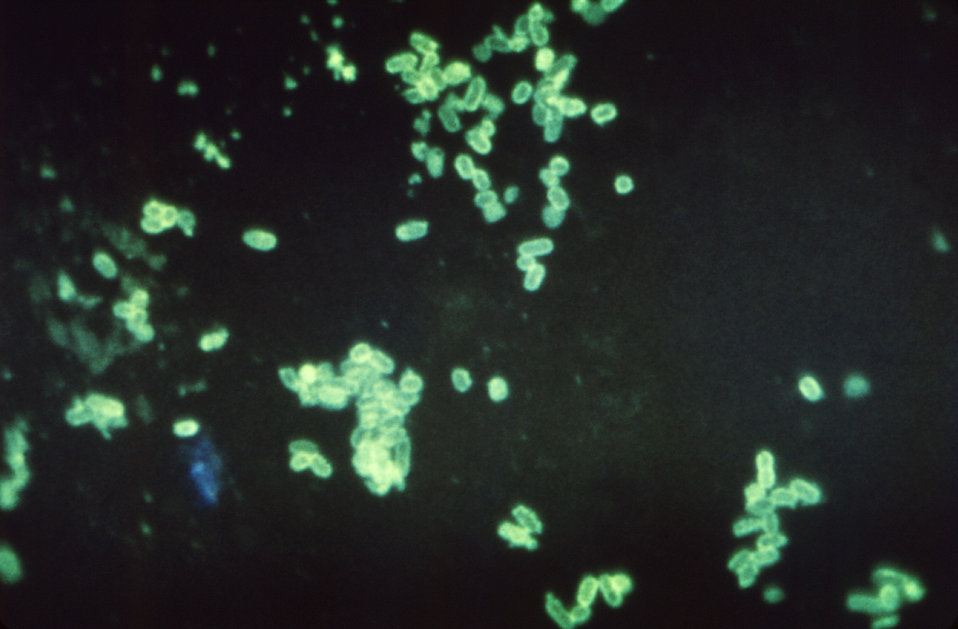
Magnified 1250X, this fluorescent antibody stained photomicrograph revealed the presence of enteropathogenic Escherichia coli bacteria, which were found in a fecal smear from an infant with diarrhea. E. coli is a member of the family of bacterial organisms within the family Enteribacteriaceae, and contains the highly pathogenic strain, which has been given the label O157:H7.